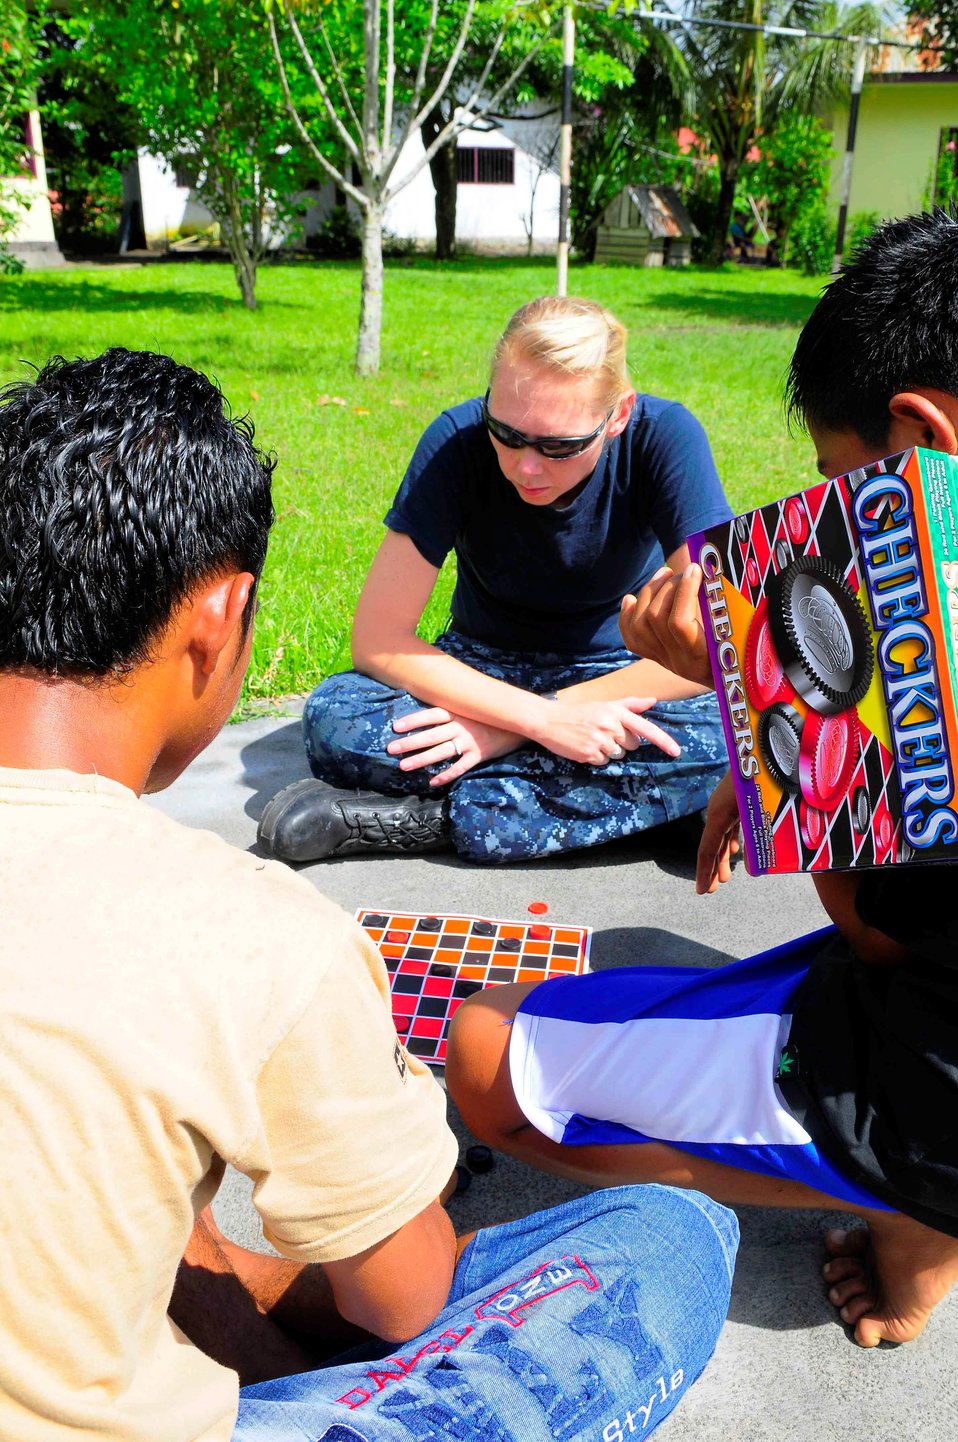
Religious Programs Specialist 1st Class Jennifer Snow Plays a Game of Checks With an Indonesian Boy

Religious Programs Specialist 1st Class Jennifer Snow, currently embarked aboard the Military Sealift Command hospital ship USNS Mercy (T-AH 19), plays a game of checkers with a boy at a community service event at the Rumah Sejahtera Bagi Anak Orphanage, in support of Pacific Partnership 2010 in Tobelo, Indonesia, on July 14, 2010. Pacific Partnership 2010 is the fifth in a series of annual U.S. Pacific Fleet endeavors conducted in Indonesia as a disaster relief exercise to strengthen regional partnerships.